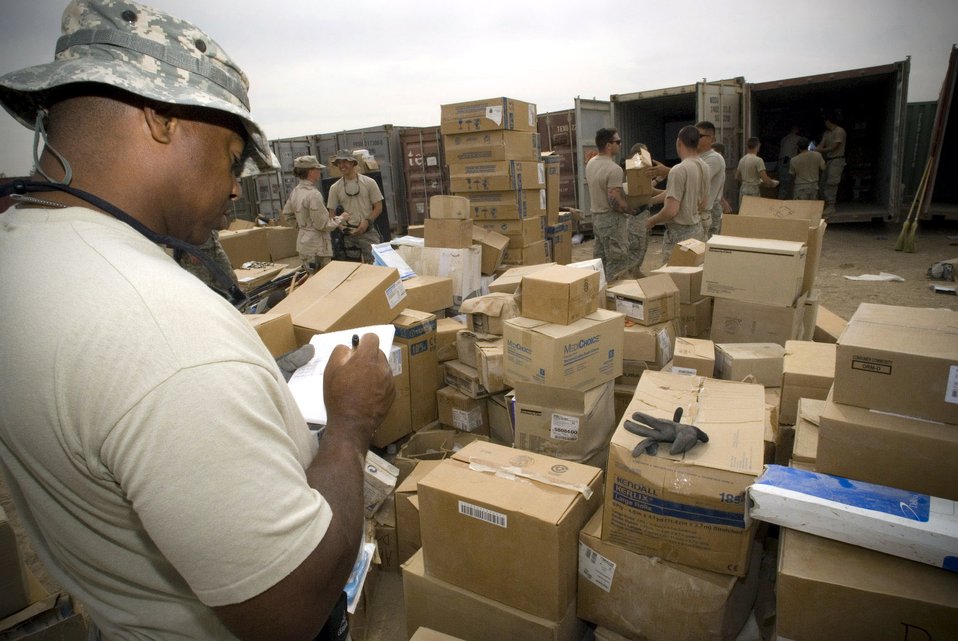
Mobile readiness team supports Army in Iraq

Master Sgt. Kevin Jackson records the product name, quantity and national stock number of the items unloaded from container express Oct. 19 at Camp Corregidor, Iraq. Serviceable assets recovered from the container express are inventoried and redistributed to Army units throughout Iraq. Airmen of various career fields volunteer to augment the Army in nontraditional